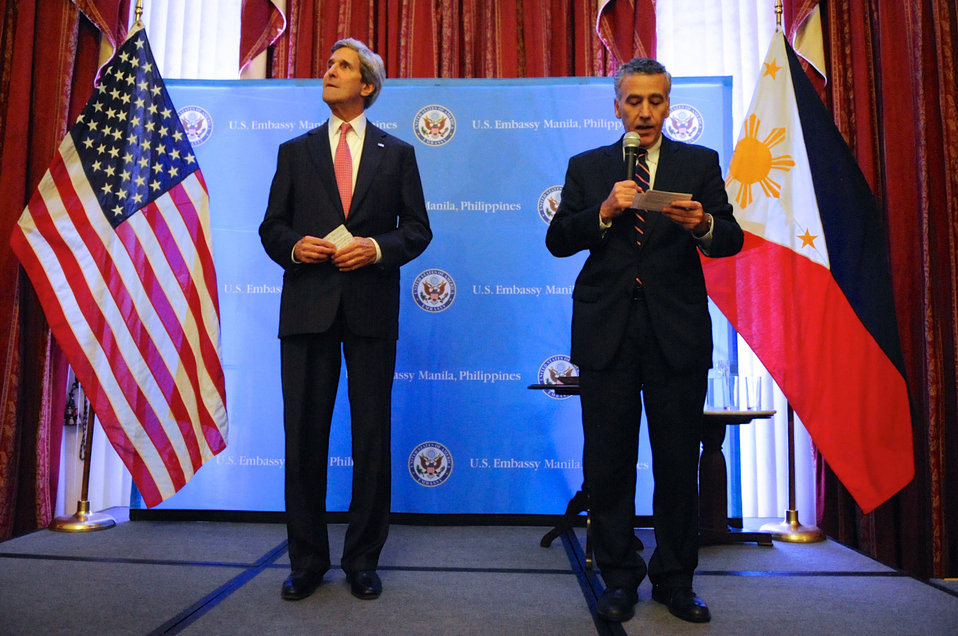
Ambassador Goldberg Introduces Secretary Kerry at the Embassy Manila Meet-and-Greet

U.S. Ambassador to the Philippines Philip Goldberg introduces U.S. Secretary of State John Kerry to his staff during a meet-and-greet in Manila on December 17, 2013.